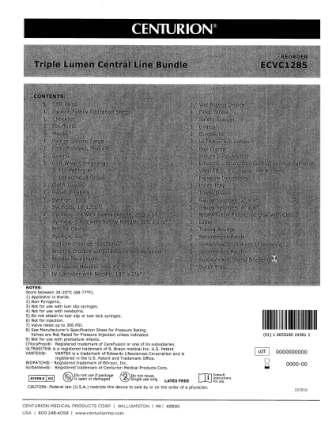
RECALLED - Convenience kits which contain bacteriostatic sodium chloride solution by American Regent

April 1, 2011 - Product Recall - Centurion Medical Products Initiates Voluntary Recall of Customized Convenience Kits (including select Central Venous Catheter, PICC Insertion, and VAD Trays) that contain American Regent’s Bacteriostatic Sodium Chloride Injection, USP, 0.9% 30 mL Multiple Dose Vials.